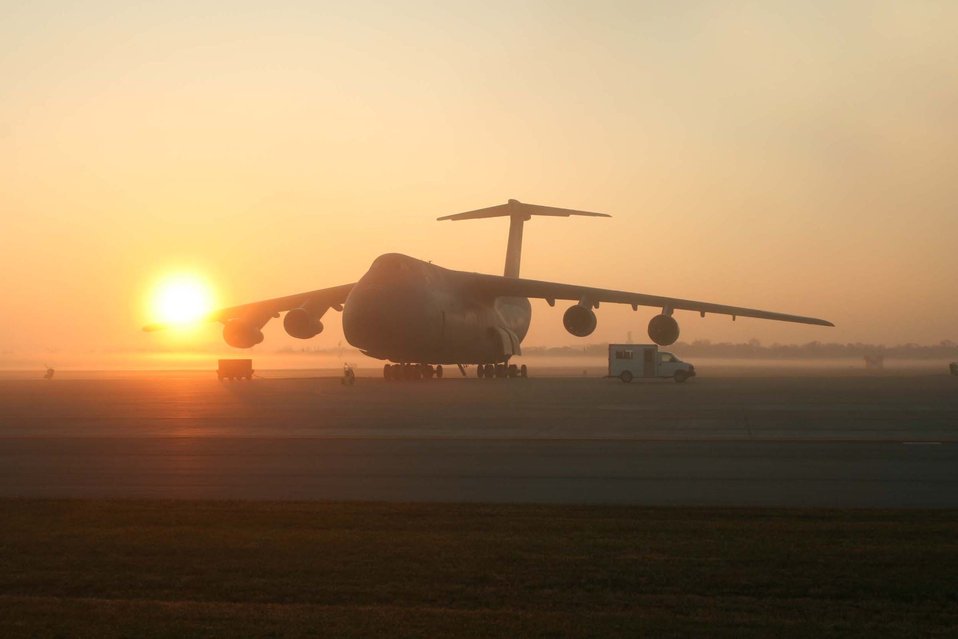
Sunshine on the Galaxy

A C-5 Galaxy from the 445th Airlift Wing waits for the next mission as the sun rises Nov. 21, 2009, at Wright-Patterson Air Force Base, Ohio.